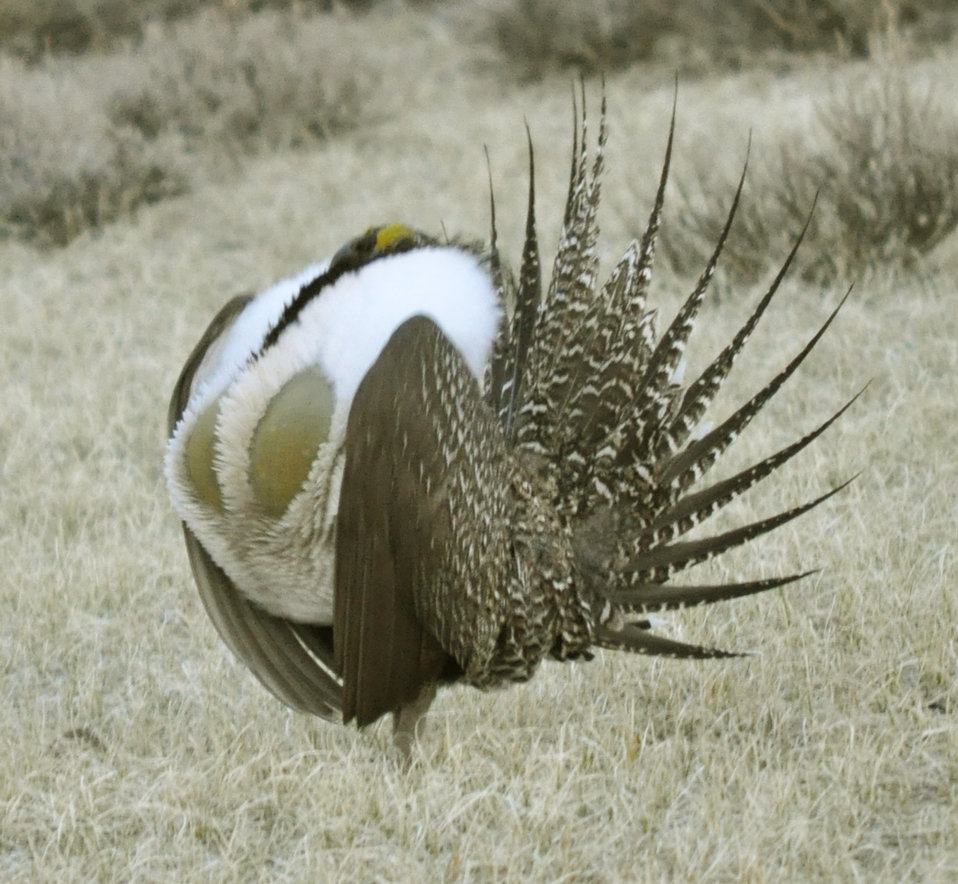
Male greater sage-grouse struts to attract females at a lek (breeding or dancing ground) near Bodie, California in April.